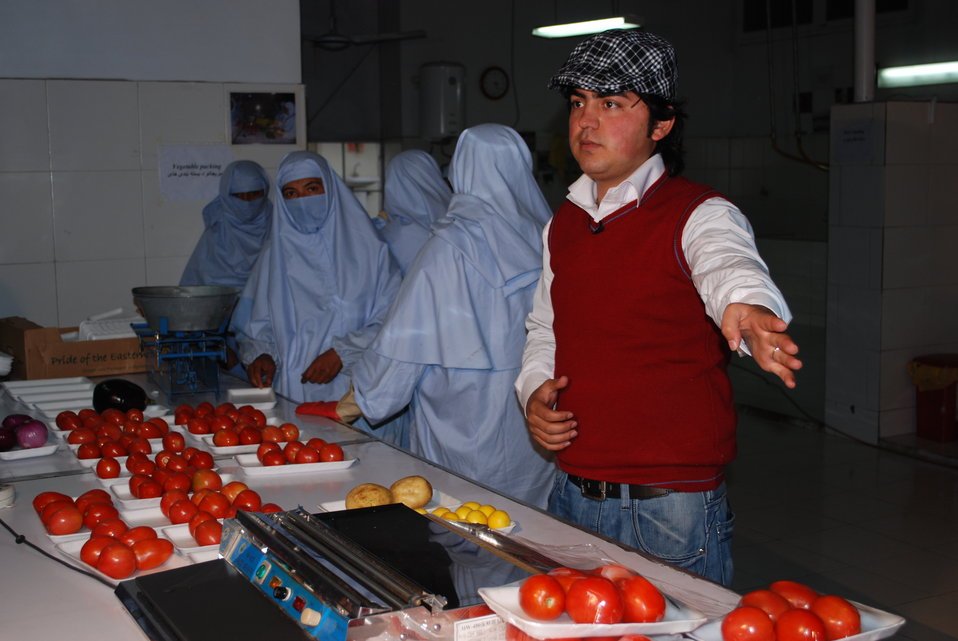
'On the Road' in Nangarhar Province